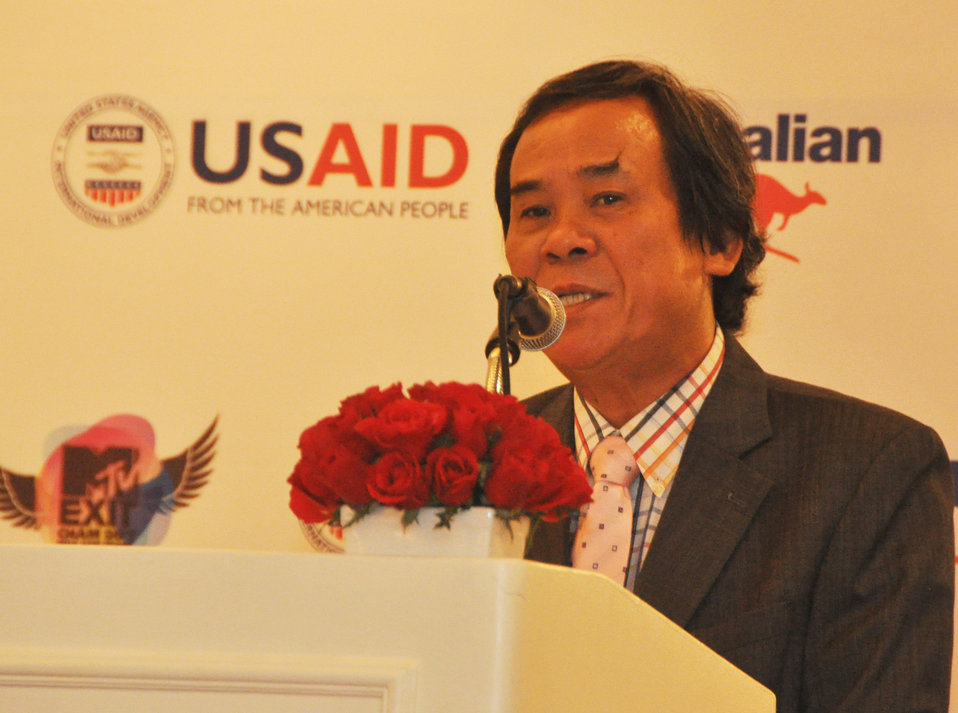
Dr. Nguyen Van Tinh, Director General, International Cooperation Department, Ministry of Culture, Sports and Tourism at the MTV Exit press launch

USAID joins MTVExit to launch documentary and awareness campaign against human trafficking